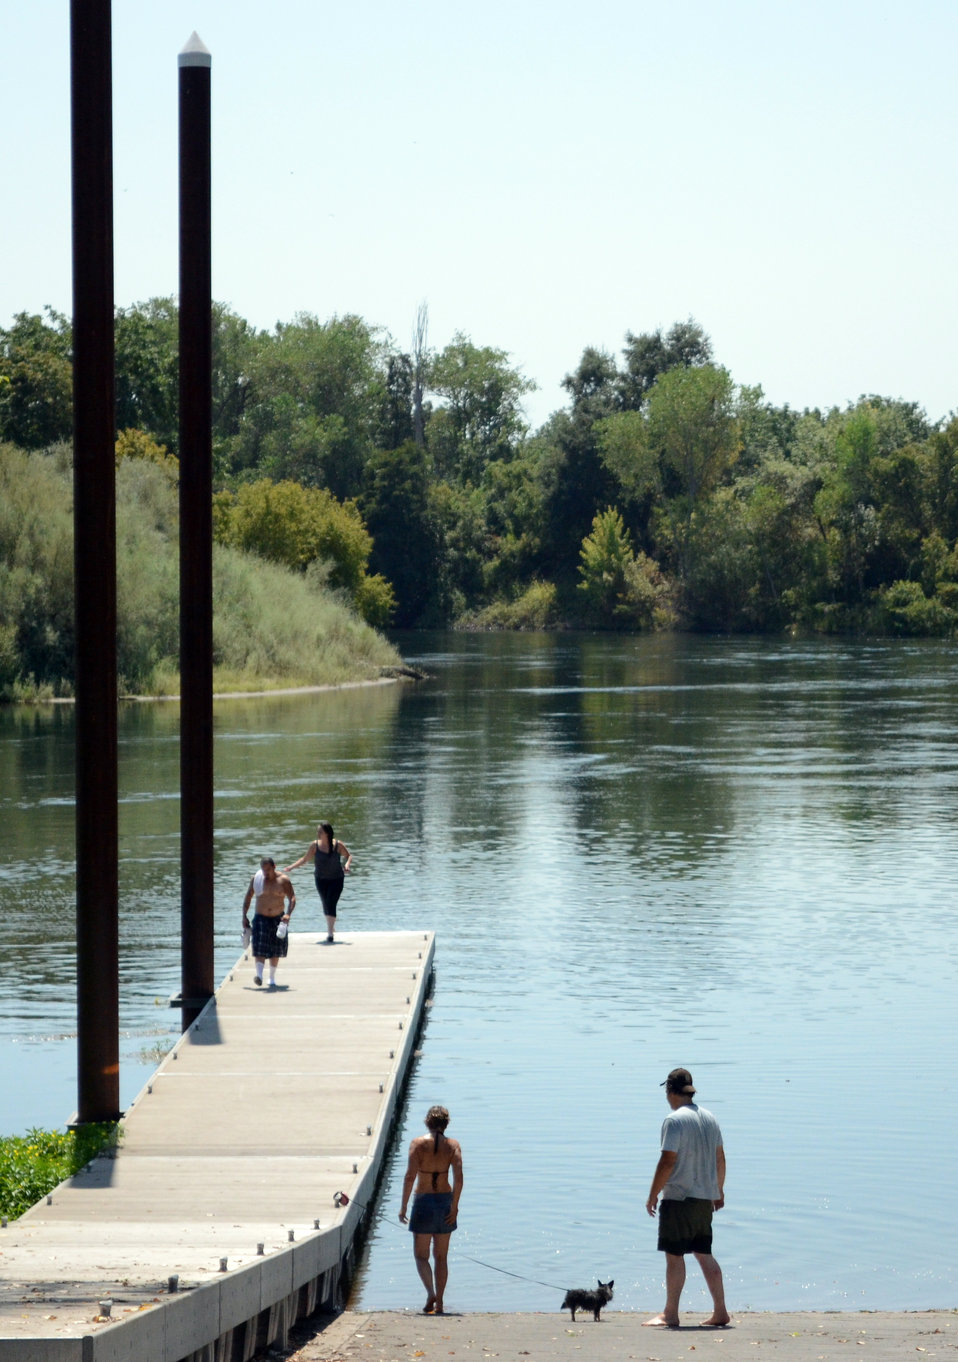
Sutter Basin Feasibility Study Nears Final Milestone

130821-A-ZW314-018: People find relief from a hot summer day by cooling off along the Feather River at Live Oak Park and Recreation Area in Live Oak, Calif., Aug. 21, 2013, just steps from a levee included in the Sutter Basin Feasibility Study's recommended plan. The study, which is led by the U.S. Army Corps of Engineers Sacramento District, will determine the level of federal involvement in levee improvements along more than 40 miles of the Feather River. Photo cropped for emphasis.